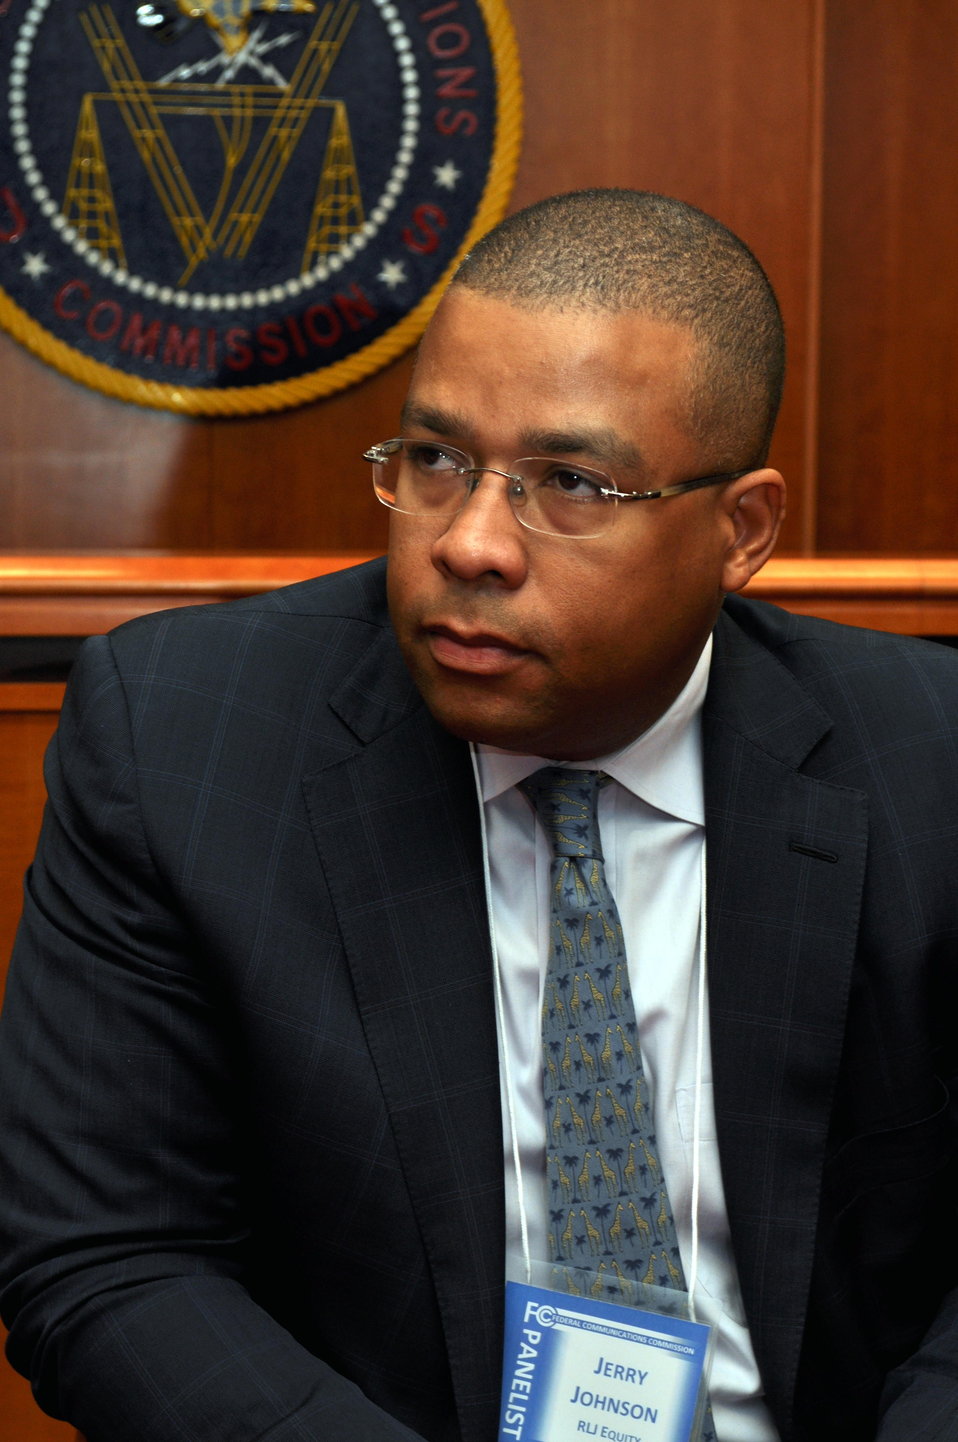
Capitalization Strategies

Workshop for small, minority and women owned businesses. Hosted by the Office of Communications Business Opportunities